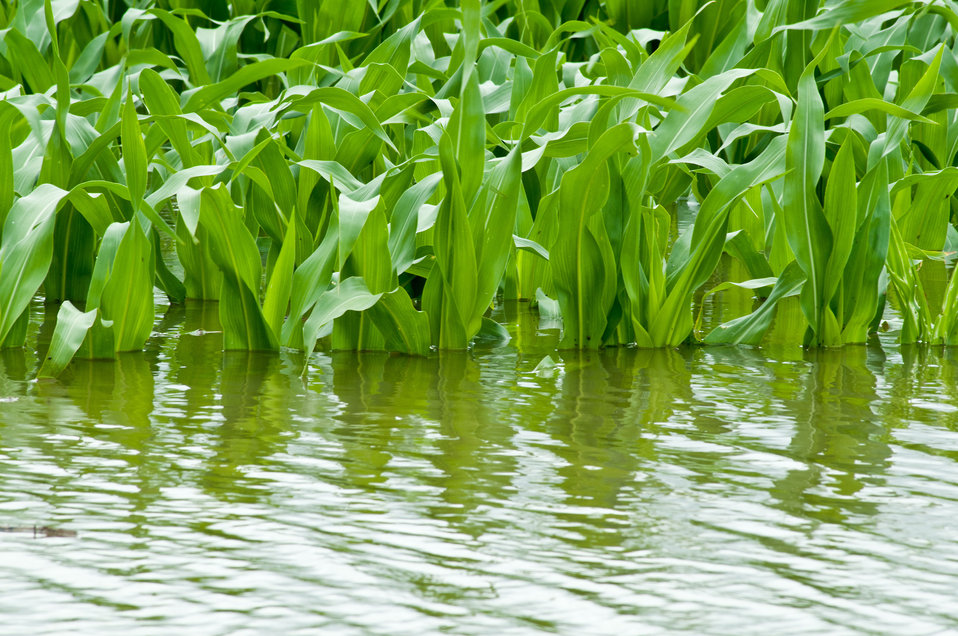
Mississippi River floodwaters have pushed into Yazoo River and into this cornfield near Yazoo City, MS, on Monday, May 16. 2011.